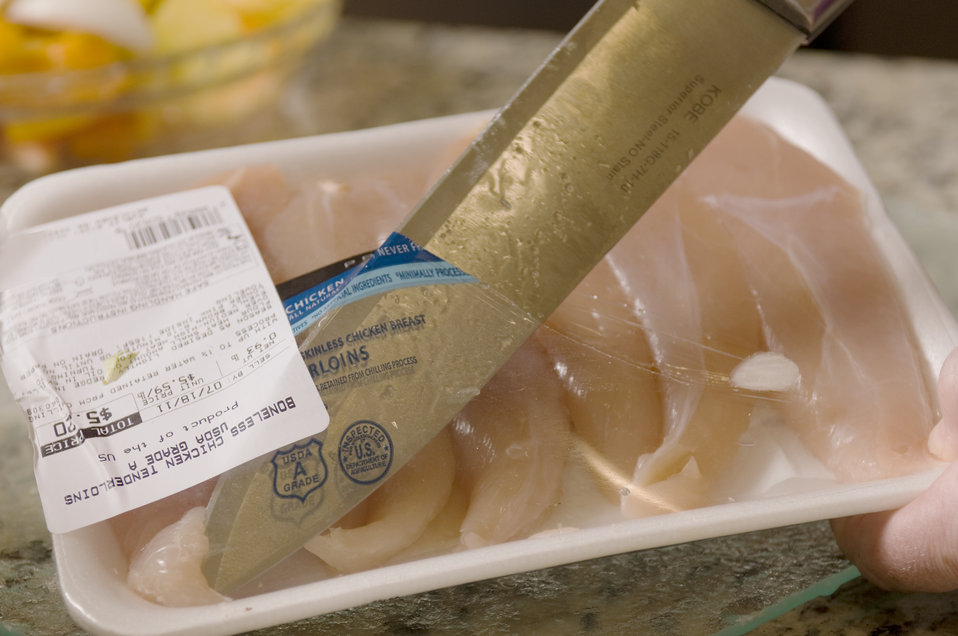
This photograph shows a person in the process of opening a small package of deboned chicken breast filets, by using a knife to cut through the exterior plastic wrapping.